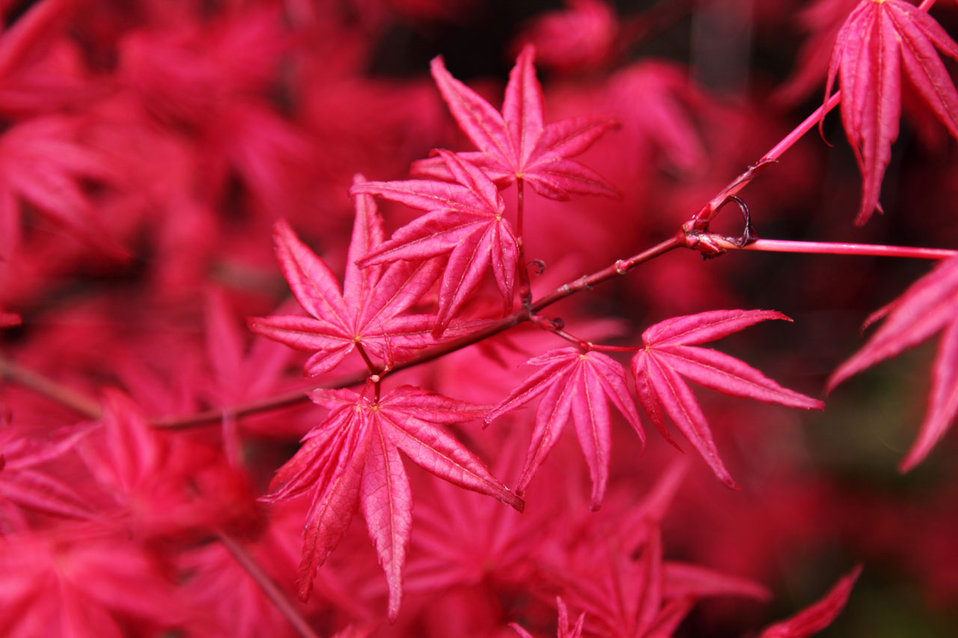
Japanese maple - acer palmatum.